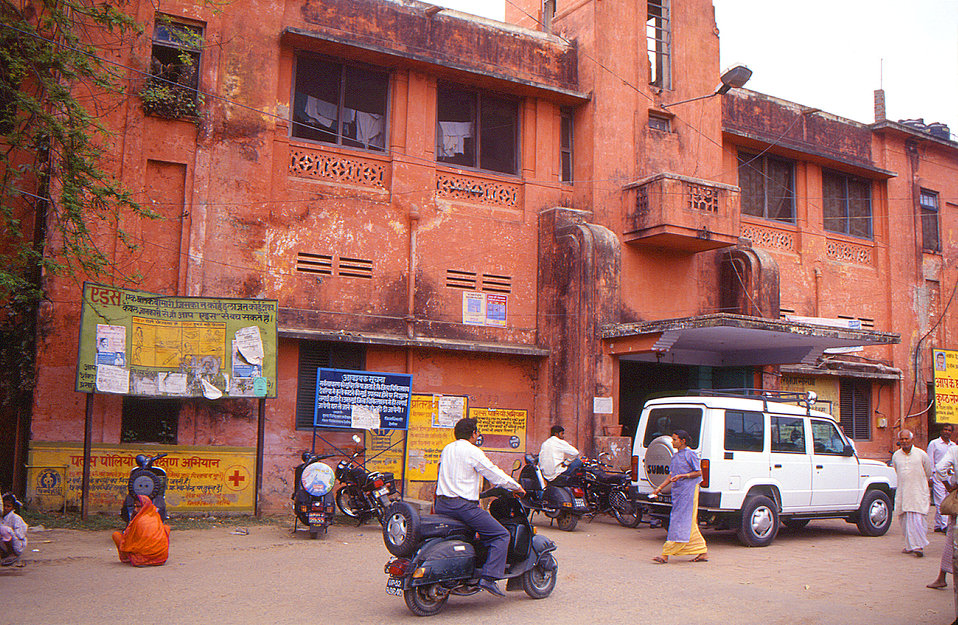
The global STOP Transmission of Polio (STOP) initiative to eradicate polio is the largest public health initiative in history. Team members are recruited and trained primarily by the Centers for Disease Control, and once on assignment, are under the supervision of either WHO, or UNICEF. Established in the fall of 1998 by the World Health Assembly, the organization's primary goal was, and is, to eradicate polio, while strengthening society's public health capacity to control other major childhood diseases.This photograph of a district health office in India, was captured during a STOP assignment that had taken place between January and April, 2000. Chris Zahniser, B.S.N., R.N., M.P.H., the team member and photographer, was assigned to the state of Uttar Pradesh in northern India, and spent three months working in the Districts of Gorakhpur and Deoria.